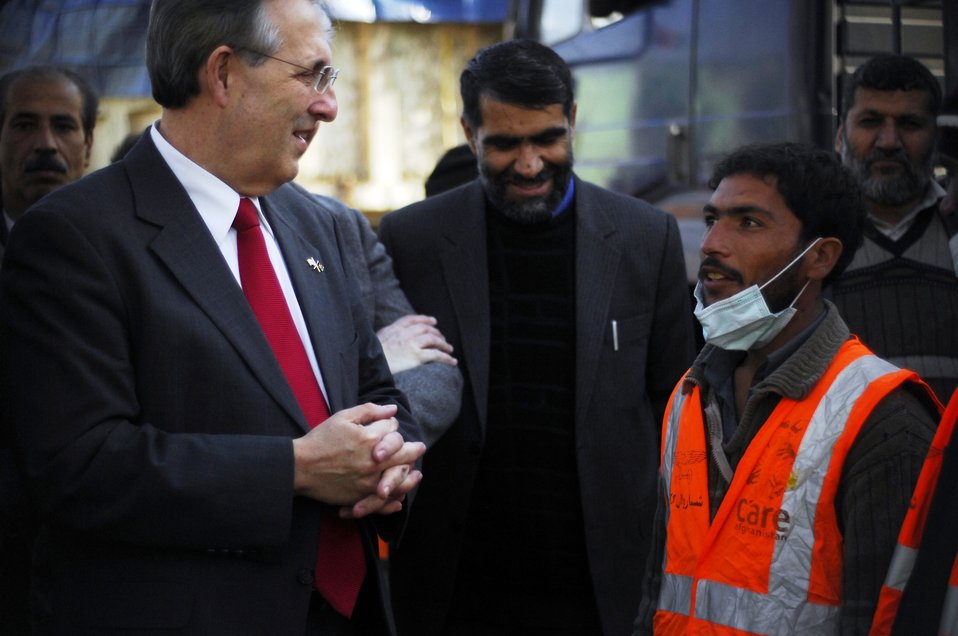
Care12